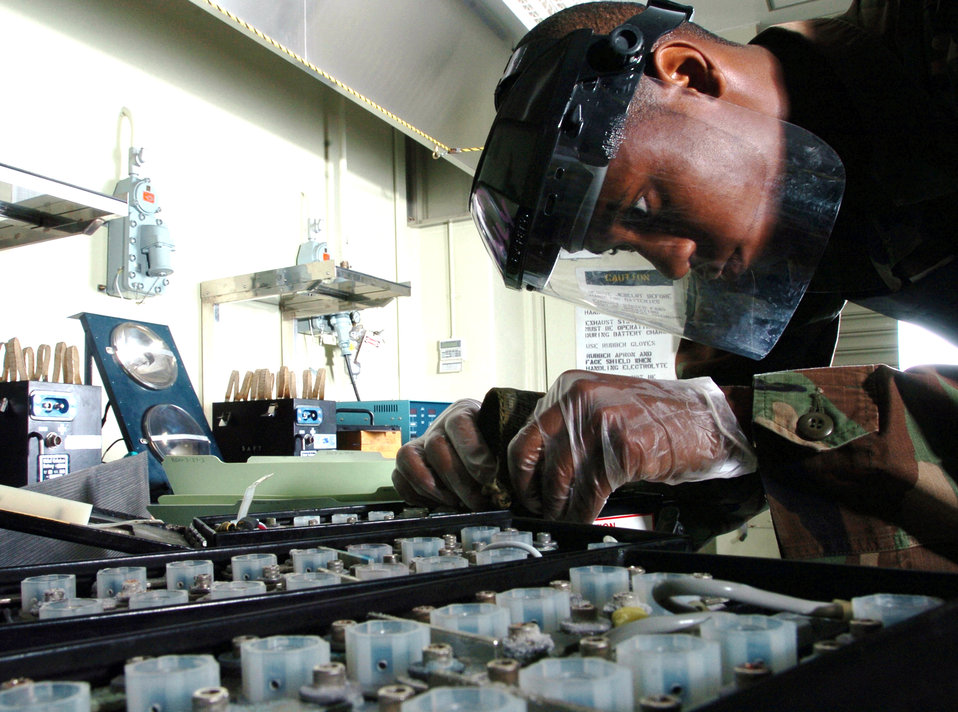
Battery check

YOKOTA AIR BASE, Japan -- Airman 1st Class Chad Bowen inspects a C-17 Globemaster III's batteries for corrosion. He is an electro and environmental technician who maintains cryogenic and compressed gas units. Technicians here repair life raft inflation devices, small gas oxygen cylinders and batteries. Airman Bowen is assigned to the 374th Maintenance Squadron's accessories flight.